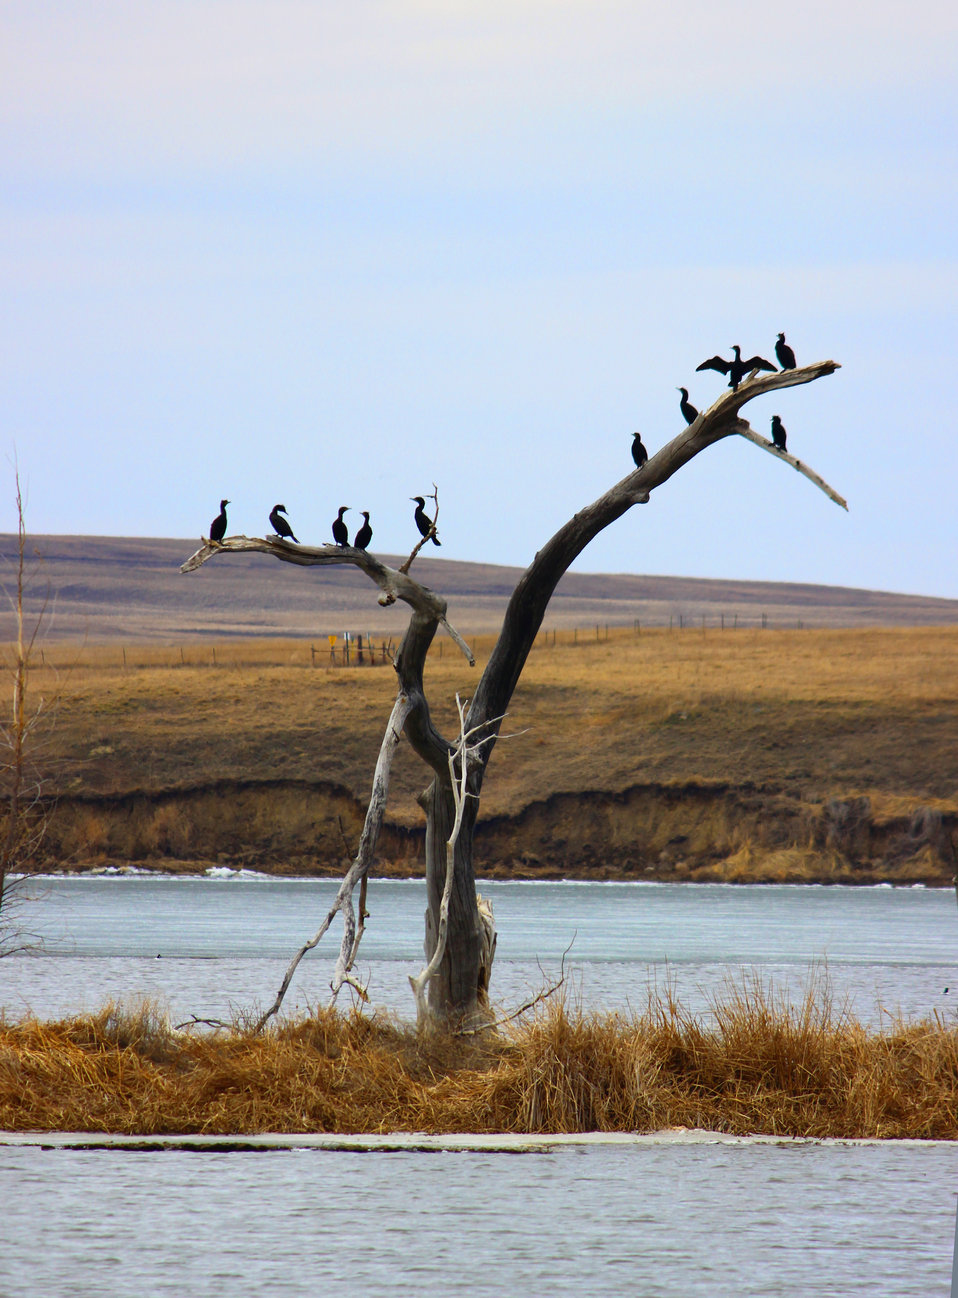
Double-crested Cormorant

Double-crested cormorants nest in trees such as the one these are perched in. Cormorants catch fish, frogs, and mudpuppies with their hooked bills by diving and swimming beneath water. Unlike ducks, cormorants have no oil glands with which to waterproof their feathers, so they can be seen standing in the sun with their wings spread (like one in this photo) to dry their feathers. These are perched on the Bender WPA in McIntosh County.